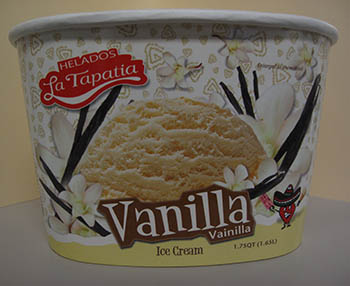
RECALLED – Ice cream products

March 19, 2014 – Product Recall – Helados La Tapatia, Inc. Recalls Products Because of Possible Health Risk.